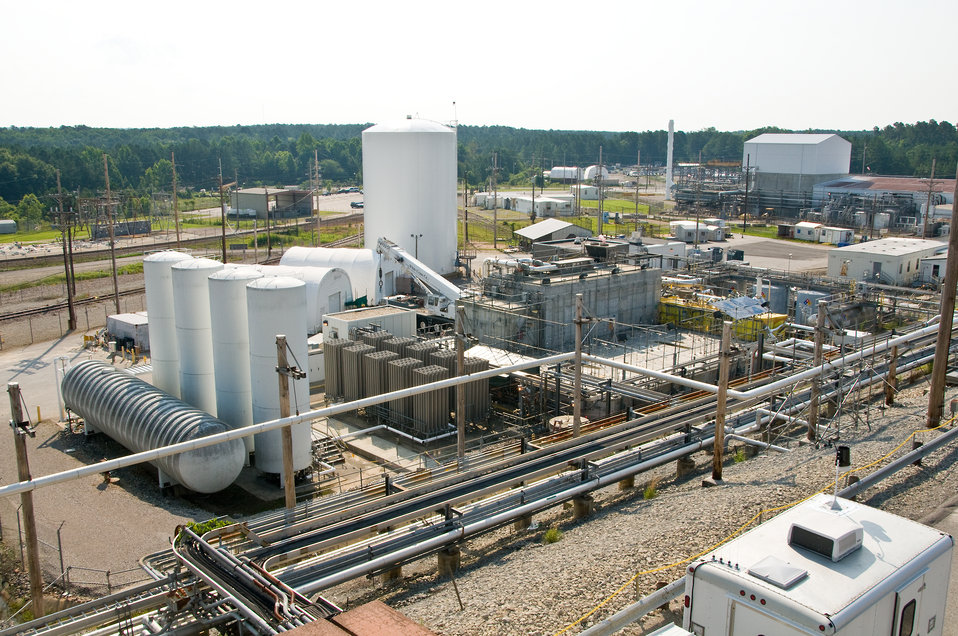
Salt Processing Reaches First of Two 2012 Contract Milestones

Savannah River Remediation (SRR) has reached a contract milestone for 2012 by processing over 500,000 gallons of salt waste in its Interim Salt Disposition Process (ISDP) at the Savannah River Site (SRS).

Essential components of the ISDP is the Actinide Removal Process (ARP) and Modular Caustic Side Solvent Extraction Unit (MCU), which work as an integrated system to remove nearly all of the radioactive isotopes from salt waste solutions in SRS’s waste tanks before the waste is transferred to the Saltstone facilities for disposition.

The Modular Caustic Side Solvent Extraction Unit (MCU) reached its first 2012 contract milestone recently by processing over 500,000 gallons of salt waste.